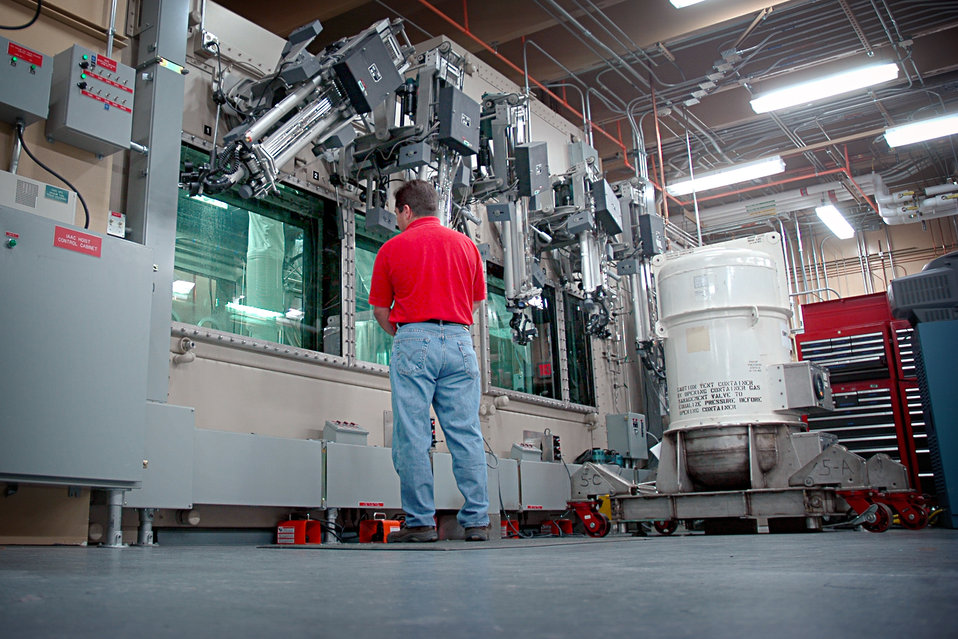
At the Idaho National Laboratory stood up, equipped and operated the completely new Space and Security Power Systems Facility in near-record time, followed by component acceptance, assembly, testing and delivery of the radioisotope power system for the pioneering new mission to the Kuiper Belt, Pluto and deep space beyond the Solar System.